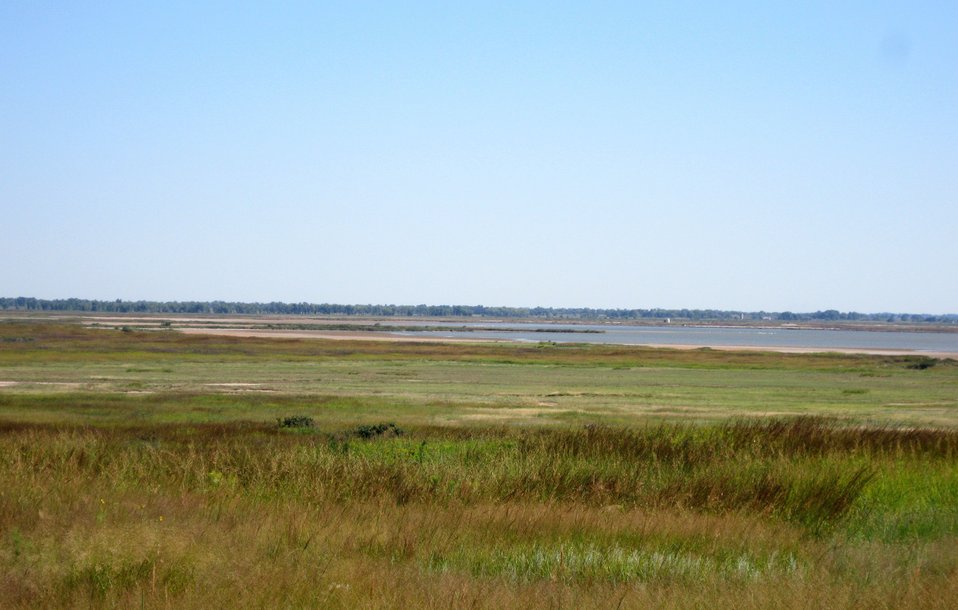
Big Salt Marsh, Quivira Refuge, Sept 2010

At Quivira National Wildlife Refuge in Kansas, a view of the marsh as it appears in a year with normal or close-to-normal rainfall.